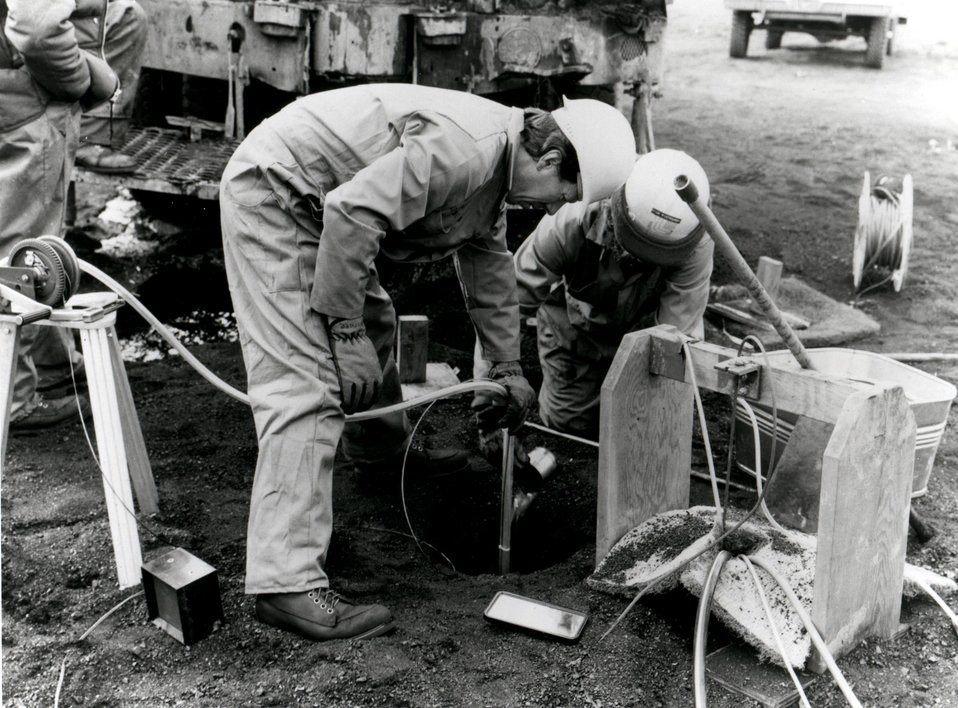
A field crew sets accelerometers in a hole drilled into a coal deposit for an experiment in the fracturing of the coal with high explosives. The Kemmerer Coal Company Mine in Kemmerer, Wyoming. Circa 1975.